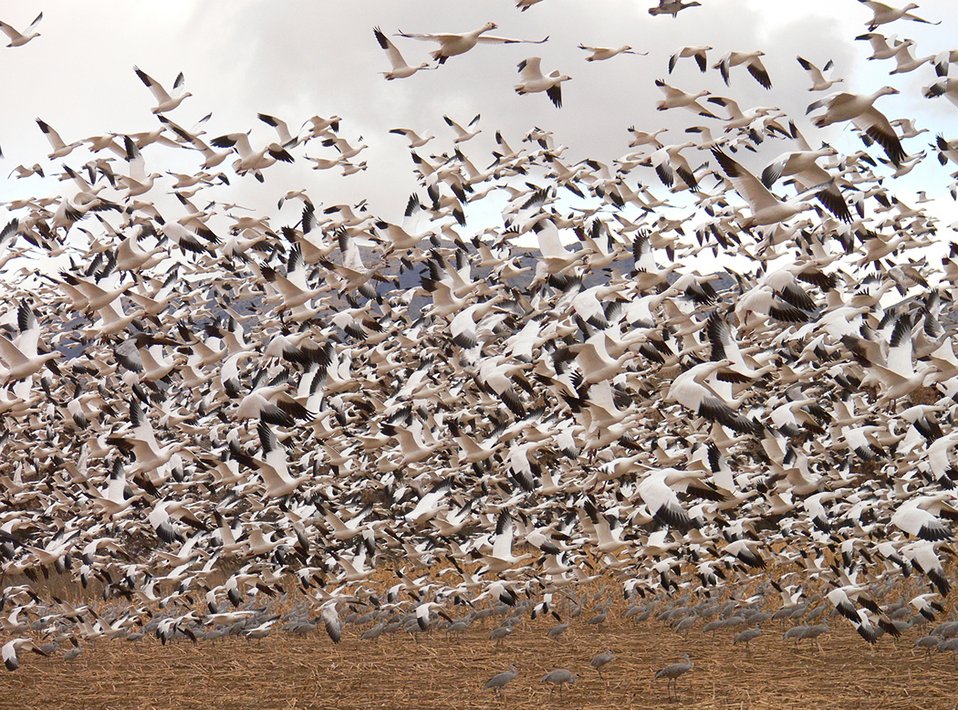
Snow geese take to the sky at Bosque del Apache National Wildlife Refuge in New Mexico.